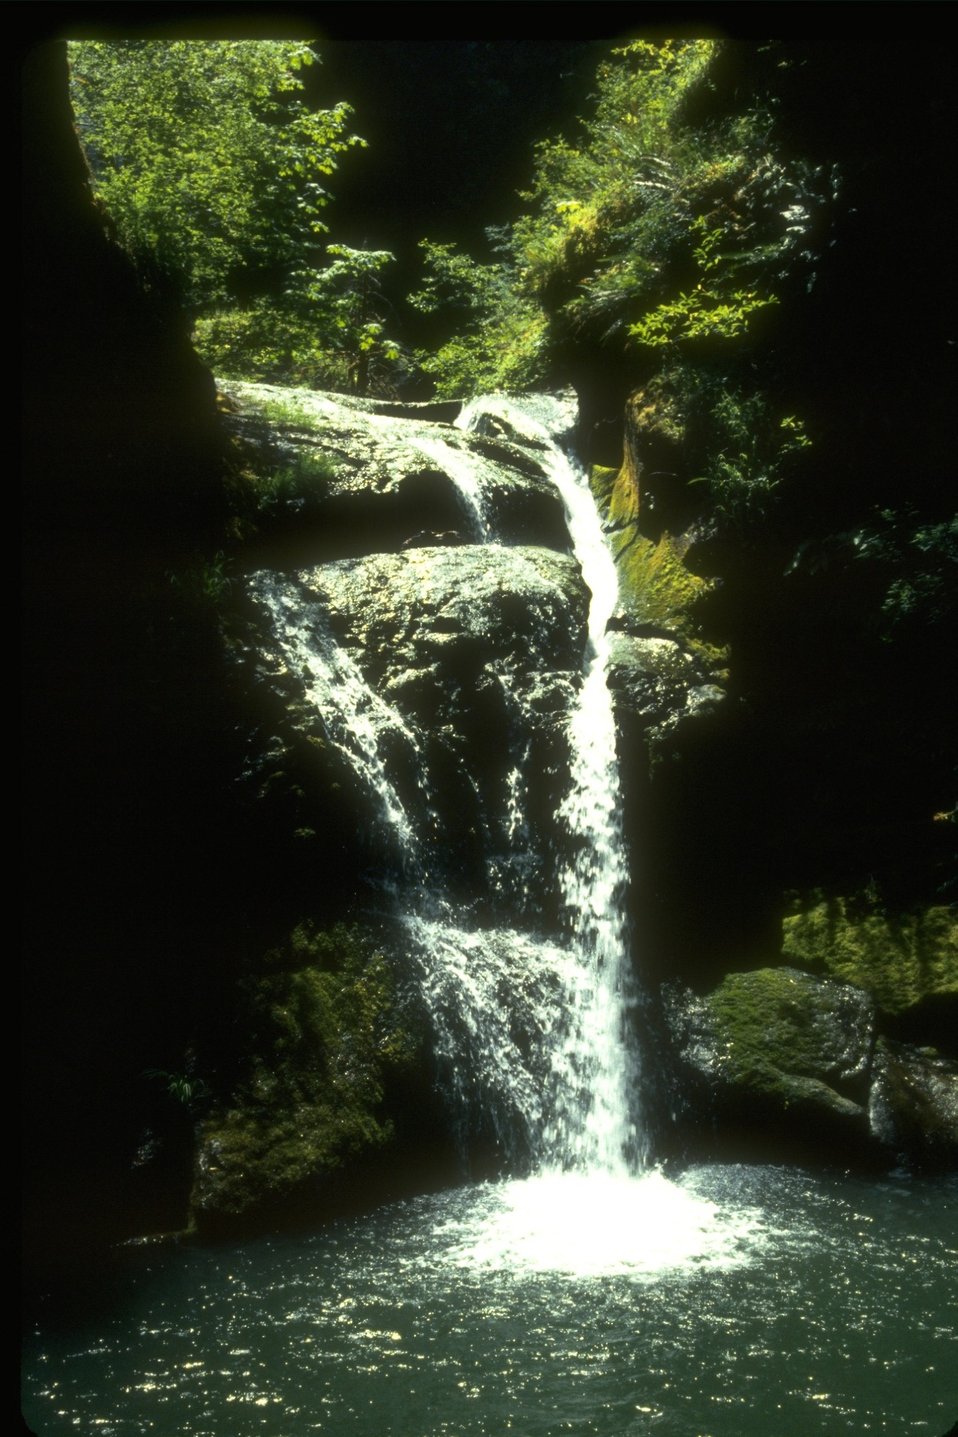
Lower Wolf Creek Falls.